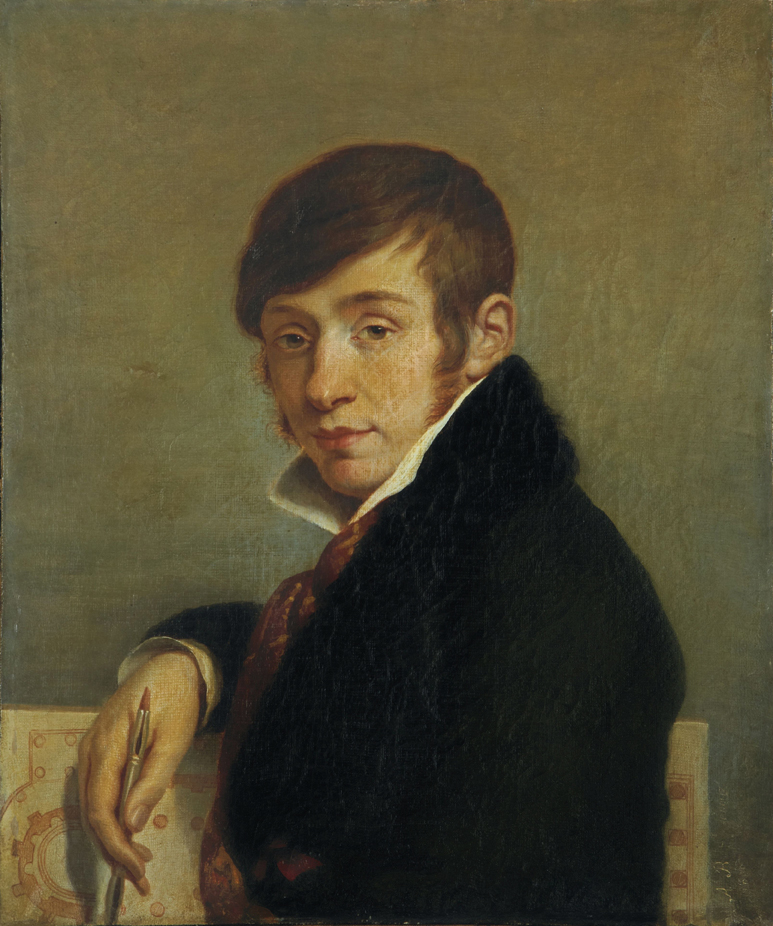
Binart-dupuis